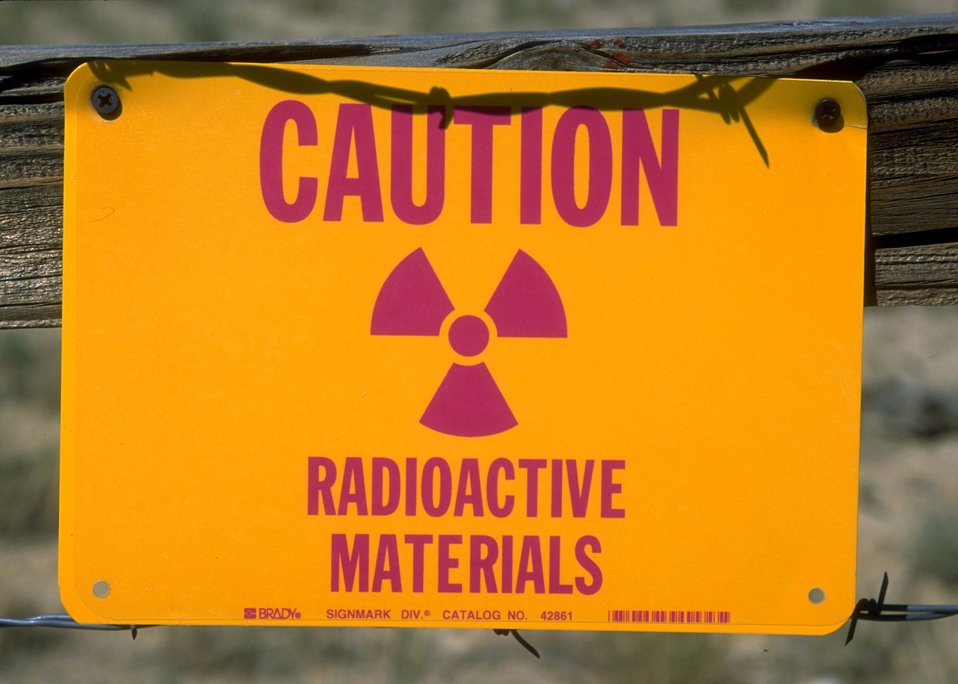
Caution sign posted concerning radioactive materials at Gas Hill Abandoned Mine Lands, Lander Field Office.